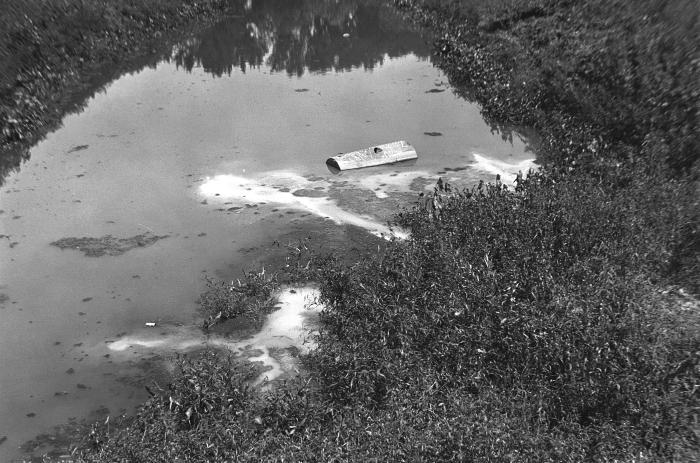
This historic 1934 photograph revealed the discharge of industrial wastes from a sewer outlet into Straight River at Owatonna, Minnesota. This image was one of a series of instructional images used by the Minnesota Board of Health to train its public health workers.